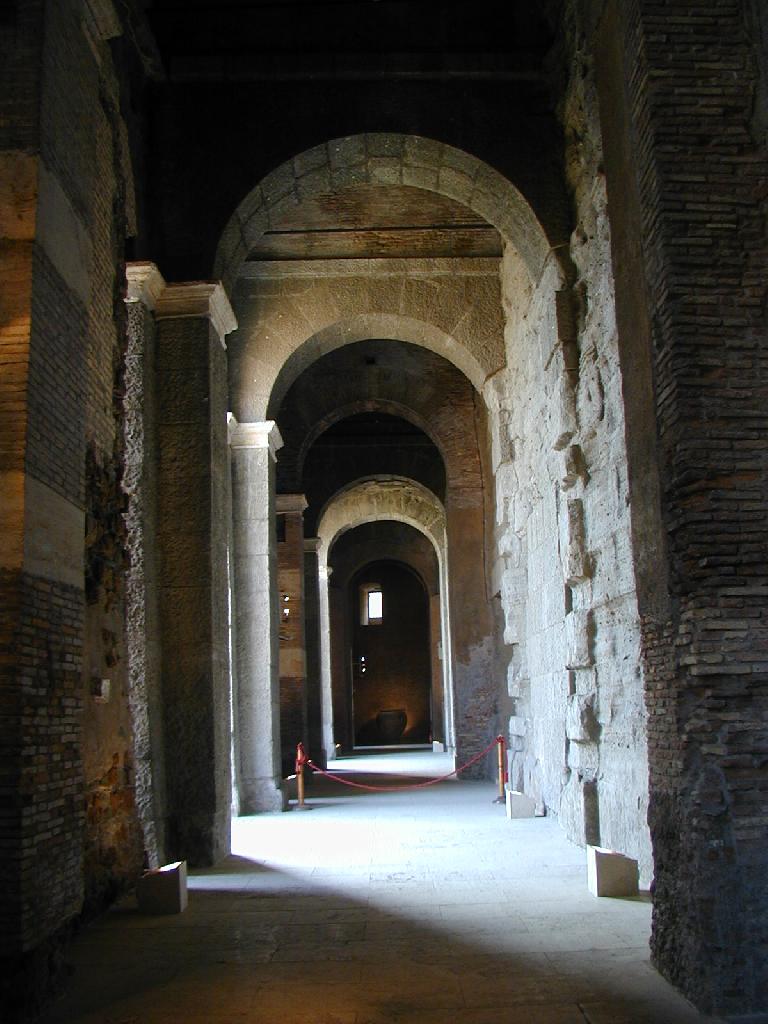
010218 campidoglio tabularium 01